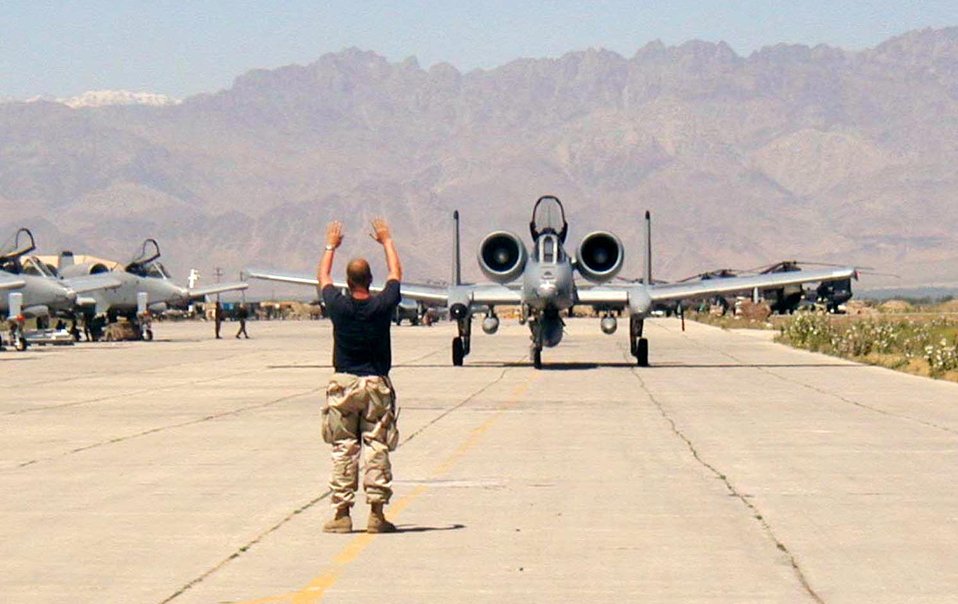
Welcome to Bagram

OPERATION ENDURING FREEDOM (AFPN) -- A crew chief from the 455th Expeditionary Operations Group at Bagram Air Base, Afghanistan, marshals an A-10 Thunderbolt II pilot to a parking spot. The 52nd Fighter Wing at Spangdahlem AB, Germany, deployed about 150 people and eight A-10s to Bagram to assume the close-air support mission from the Maryland Air National Guard.